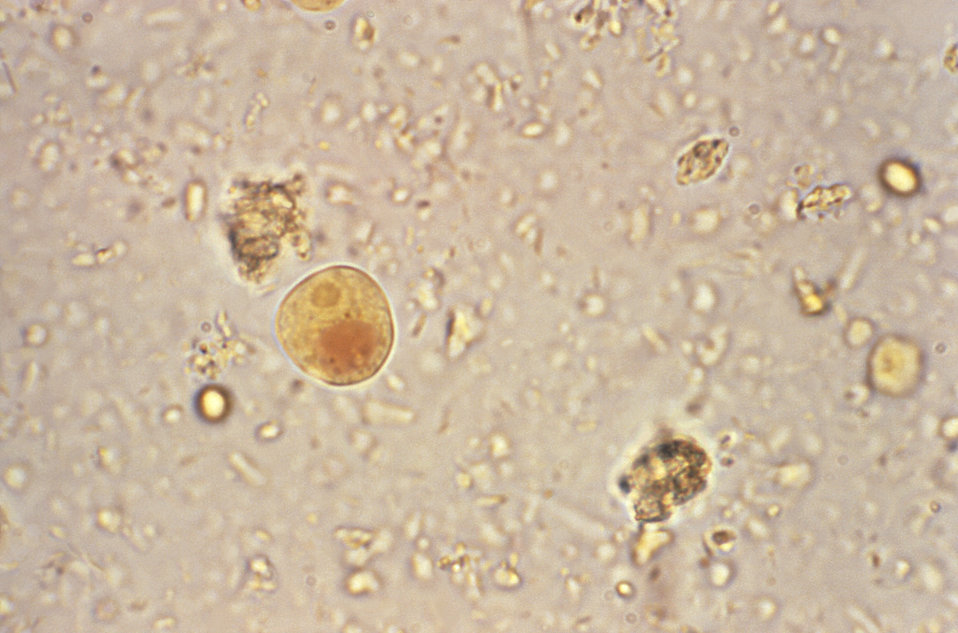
This iodine-stained photomicrograph depicts a single spherical Iodamoeba buetschlii parasitic cyst within which the nucleus with its centrally-located karyosome was visible.